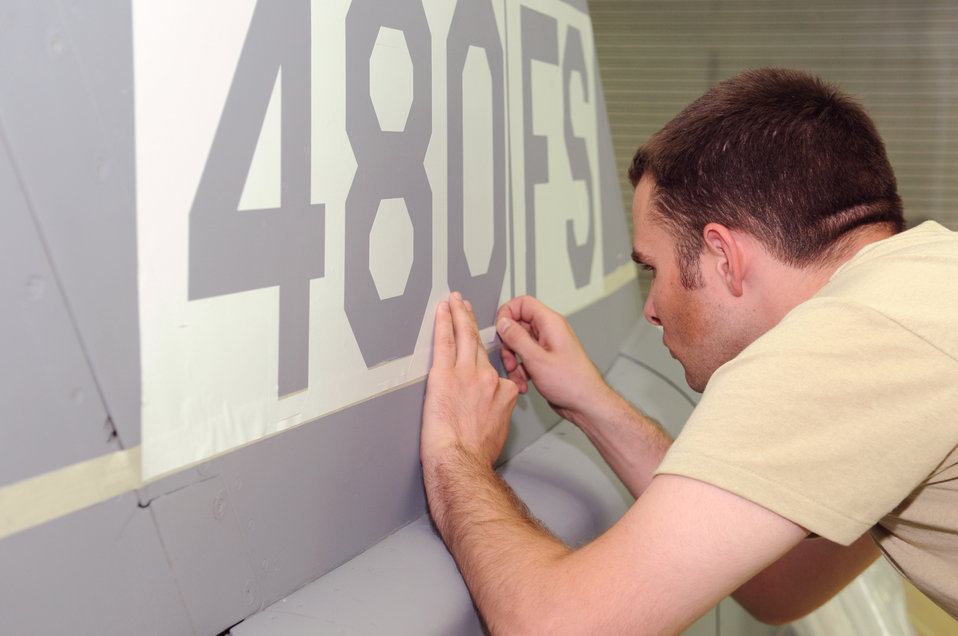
480th FS activated

Senior Airman William Parker applies a stencil on a 480th Fighter Squadron F-16 Fighting Falcon Aug 8, 2010, at Spangdahlem Air Base, Germany. Airman Parker is a 52nd Equipment Maintenance Squadron aircraft structural maintenance journeyman.